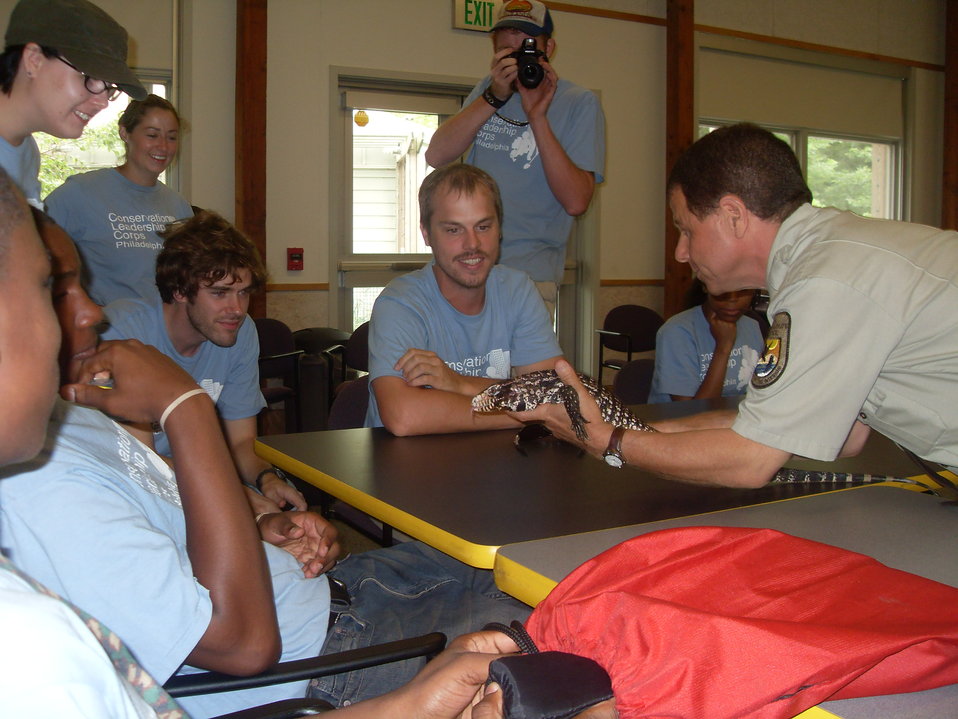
Gary Stolz and lizard

Gary Stolz, manager at John Heinz National Wildlife Refuge at Tinicum in Philadelphia, displays a reptile to refuge visitors. He credits his mom, Sandy, with encouraging his interest in nature when he was a child and putting up with his menagerie of reptiles and other pets